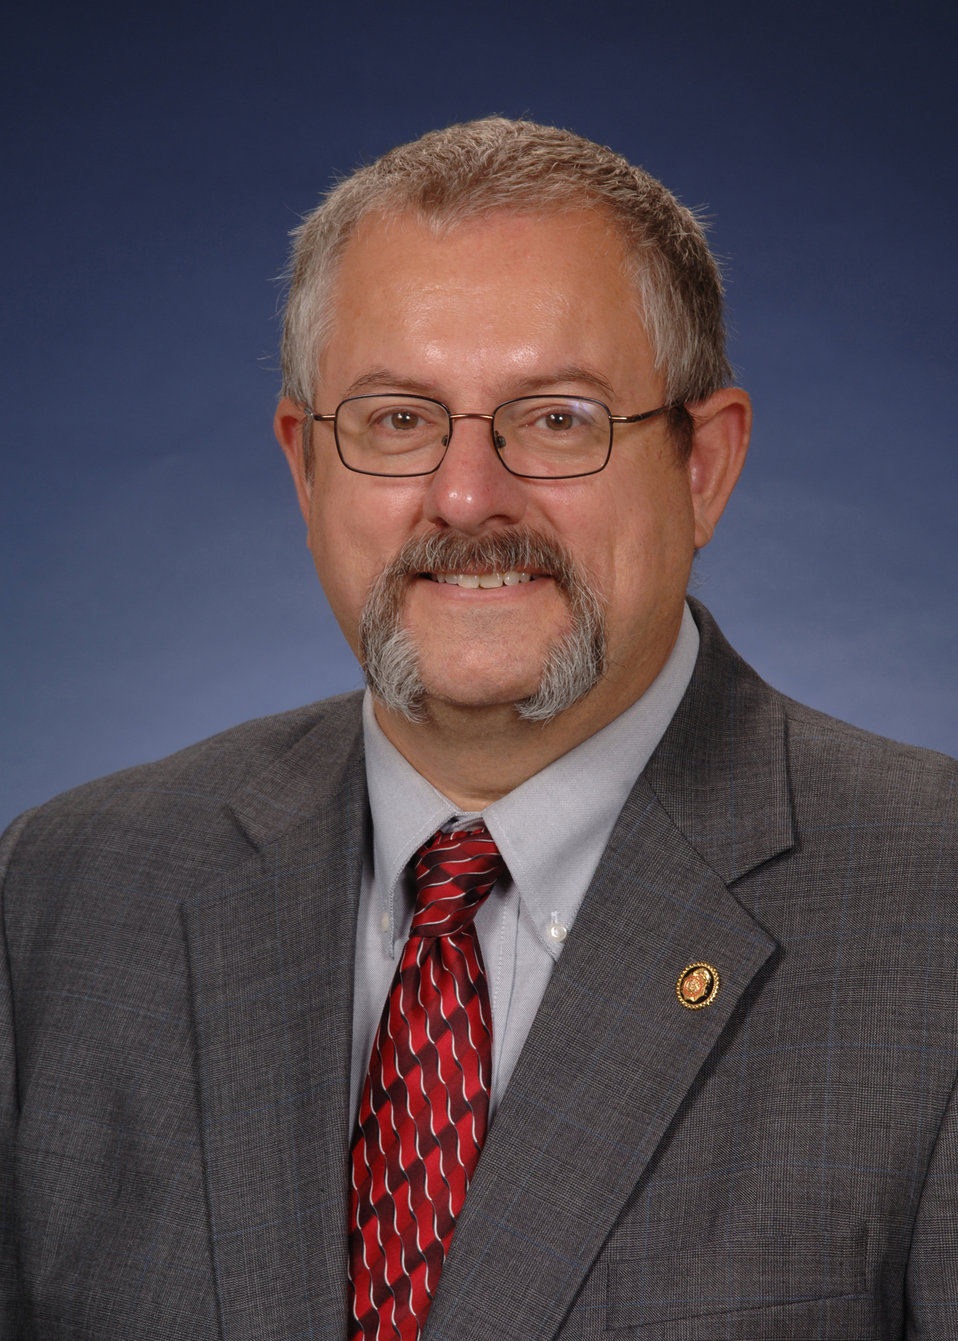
Daniel Madrzykowski

NIST fire protection engineer Daniel Madrzykowski is a winner of the 2103 Service to America Medal.